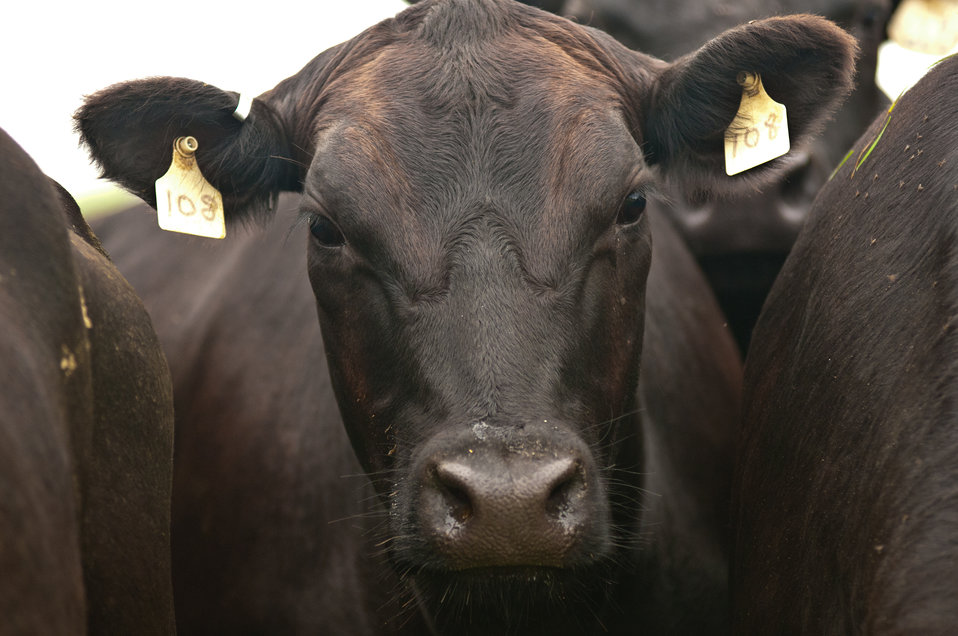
Black Angus cows and calves graze organic pastures, and for added nutrition and variety, they enjoy a daily feeding of sweet silage at Nick’s Organic Farm, owned by Nick Maravell, in Adamstown, MD on Friday, July 12, 2013. The white plastic wrapped bales of pasture grass and alfalfa have been fermenting for months to create sweet silage that stores well and can be used to feed cattle at varying amount all year long. The fermentation process sweetens the taste and increases the vitamin levels. The farm produces Black Angus beef, chicken, turkey, eggs, hay, soybeans, corn, alfalfa, orchard grass, rye; and other crops. The cattle are 100% grass-fed receiving certified organic pasture, certified organic hay (in winter), water and mineral salts mixed with sea kelp. The cattle are not fed hormones, antibiotics or animal products. Poultry feed from grain is ground from organic grain. The poultry also graze on organic pastures. The farm has conducted on-farm research with federal, state and non-profit agencies to refine organic practices. An organization such as the U.S. Department of Agriculture (USDA) Agricultural Research Service (ARS) center in Beltsville has been able to conduct research to improve organic crops and to breed and manage the cattle so that they have.